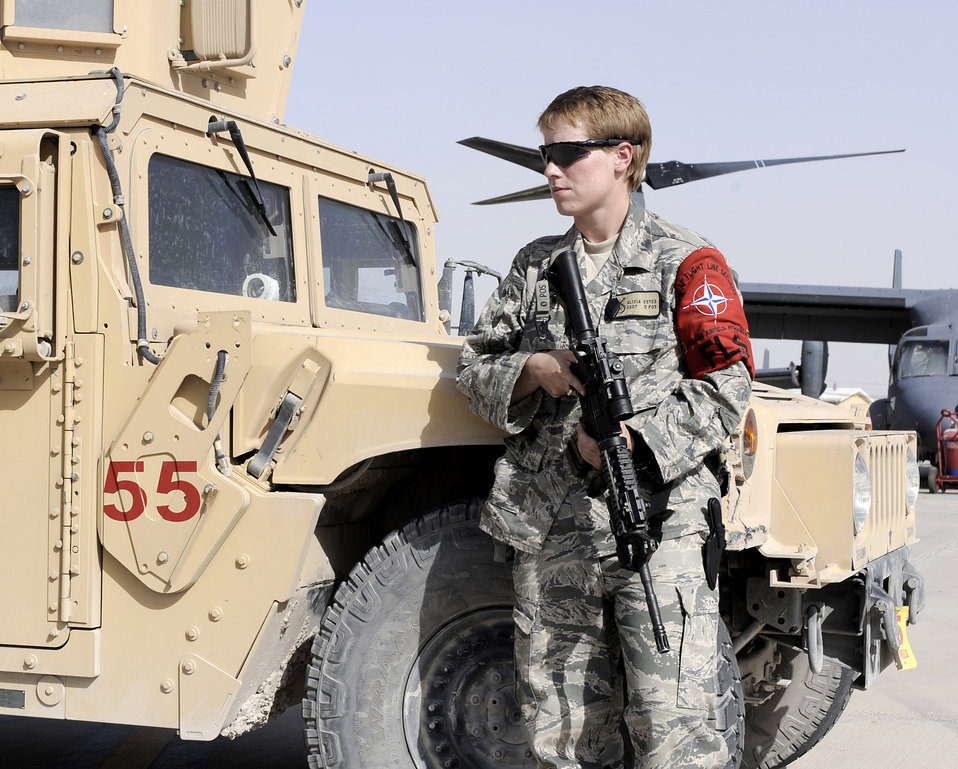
466th AEW flightline security

Staff Sgt. Alicia Estes posts security June 3, 2011, at Kandahar Airfield, Afghanistan. Sergeant Estes is a security forces Airman assigned to 466th Air Expeditionary Wing Flightline Security Office.